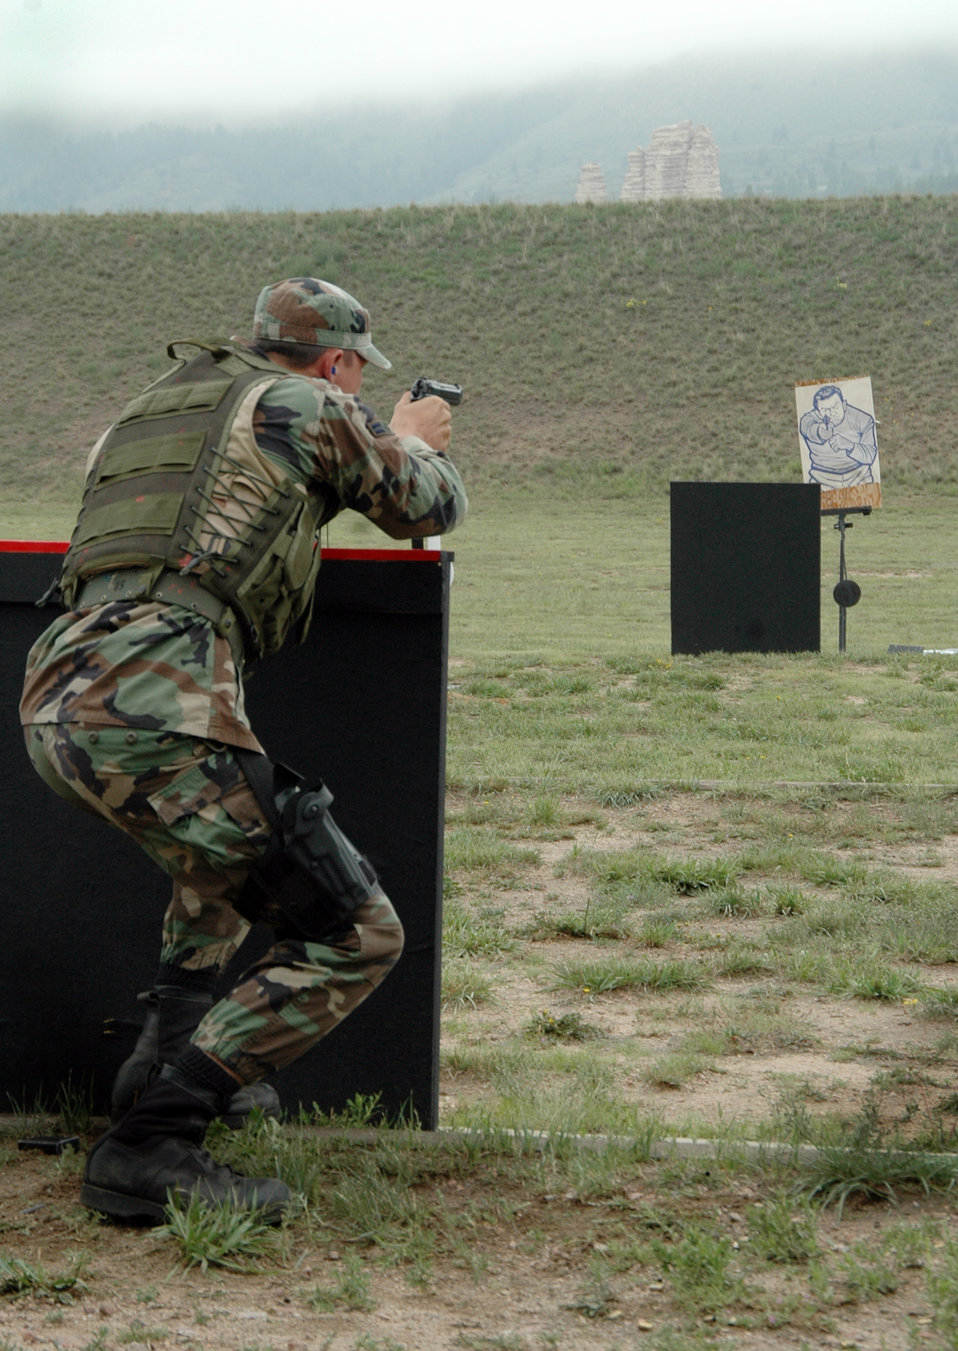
Challenge continues for security forces

Airman 1st Class Devin Stapelman shoots a moving